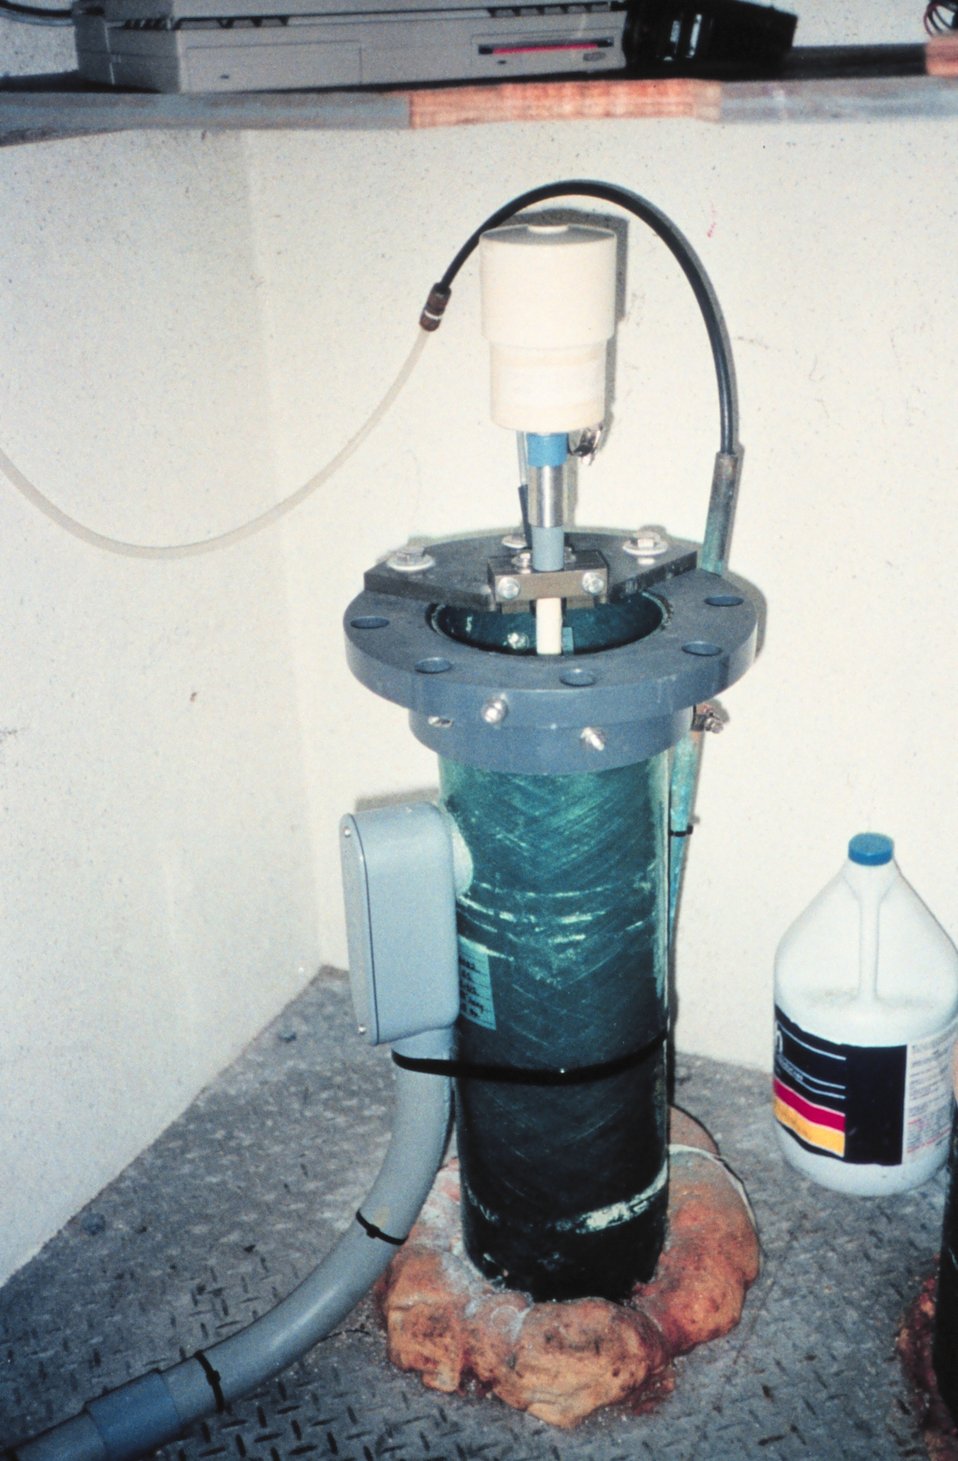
Interior of tide house showing A.I. &NXG tide gage installation at Cherry Point.